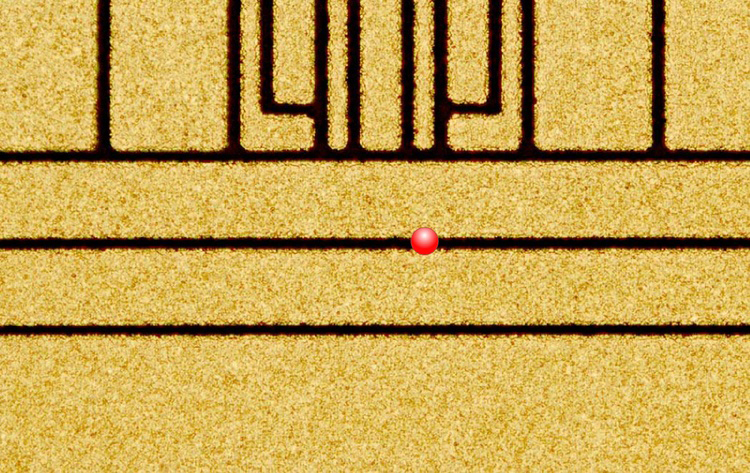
Ion Trap

Micrograph of NIST ion trap with red dot indicating where a beryllium ion hovers above the chip. The horizontal and vertical lines separate gold electrodes, which are tuned to hold the ion and generate microwave pulses to manipulate it. The chip was used in experiments demonstrating record-low error rates in quantum information processing with a single quantum bit.